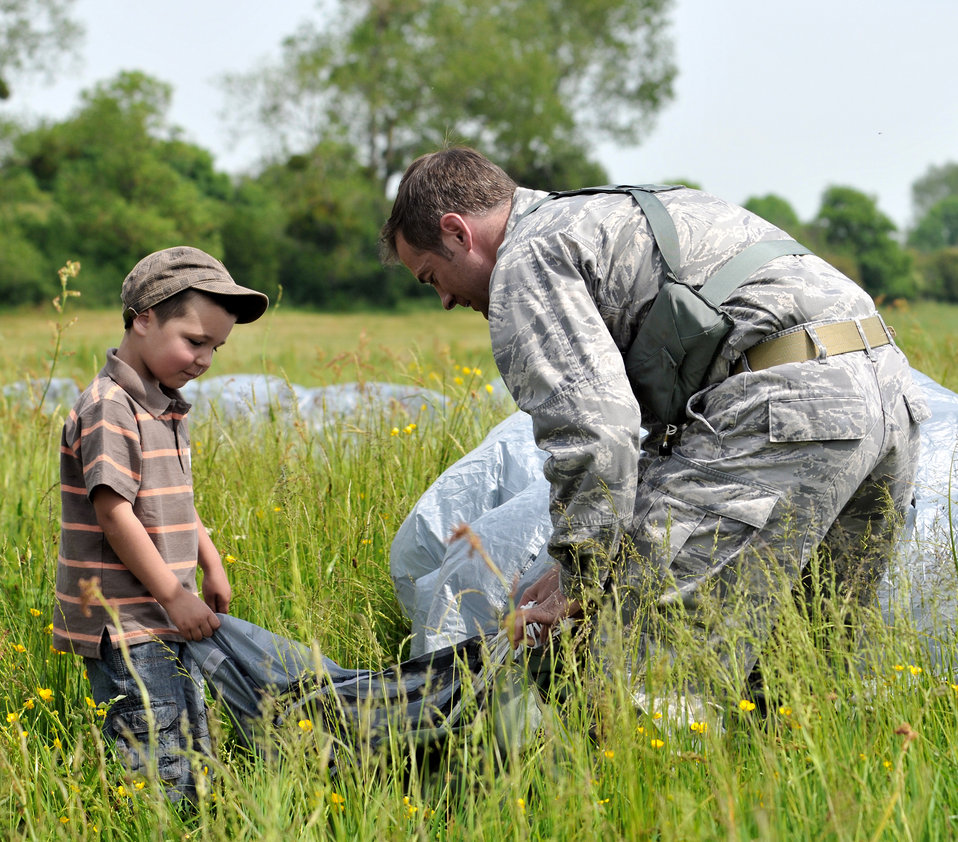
Airmen commemorate D-Day

A French child assists a member of the 321st Special Tactics Squadron in packing up his parachute after a high-altitude, low-opening jump June 5, 2010, in Normandy, France, commemorating the 66th anniversary of D-Day. The 321st STS is from Royal Air Force Mildenhall, England.